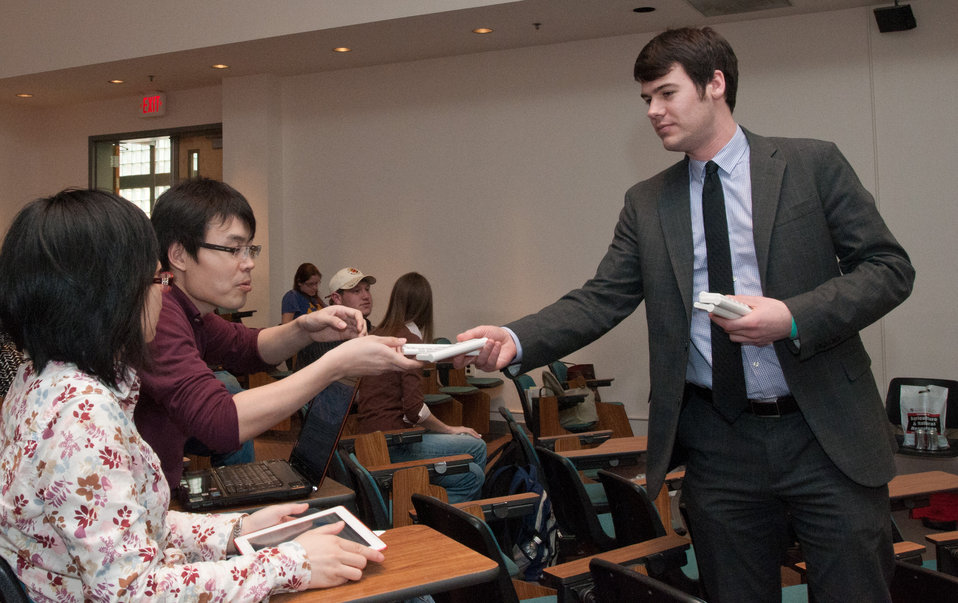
Event coordinator Tim Lapanne (right) passed out wireless polling handsets to Wenting Ju (center), Yu Hu (left) and others, before U.S. Department of Agriculture (USDA) Deputy Secretary Kathleen Merrigan presented the “Know your Farmer Know your Food” initiative to students and faculty at the Animal Sciences / Agricultural Engineering Building at the University of Maryland, in College Park, MD, on Thursday, April 7, 2011. Deputy Secretary Merrigan’s interactive presentation utilized wireless polling in the lecture room to present farming and ranching industry questions to the audience who used handheld devices to choose from a list of multiple answers. Their answers were instantly tabulated then Merrigan revealed their top choice on the screen, usually revealing misconceptions about the industries.